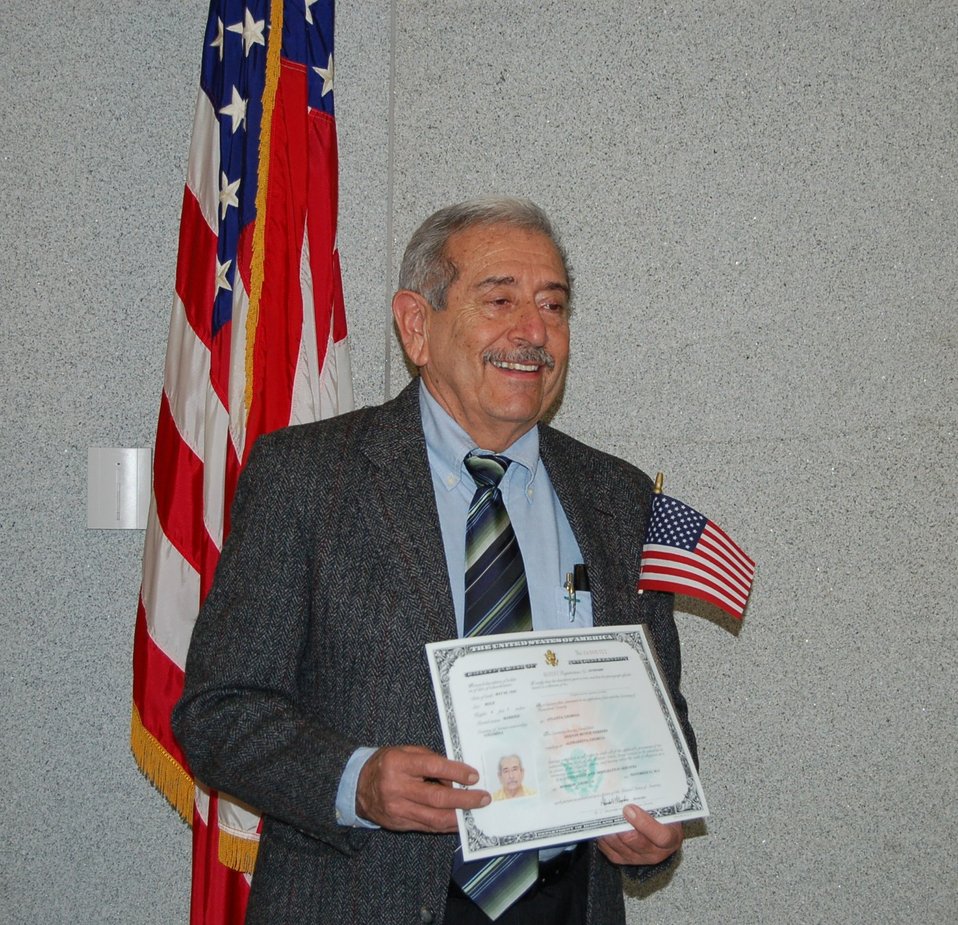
New Citizens